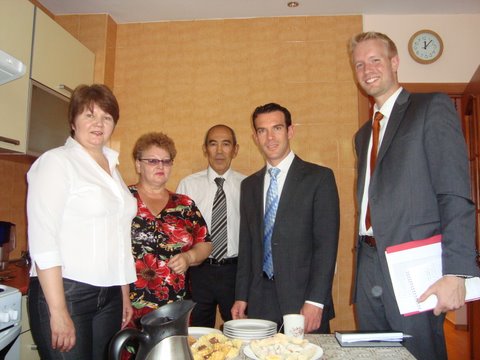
Nina, Matt Lowe, and Erik Liederbach Gather Around the Table for Tea and Treats

Nina, a shelter employee and interpreter, and Matt Lowe and Erik Liederbach, State Department personnel, gather around the table for tea and treats prepared by the Trafficking-in-Persons (TIP) shelter residents in Almaty, Kazakhtsan, on July 16, 2010.